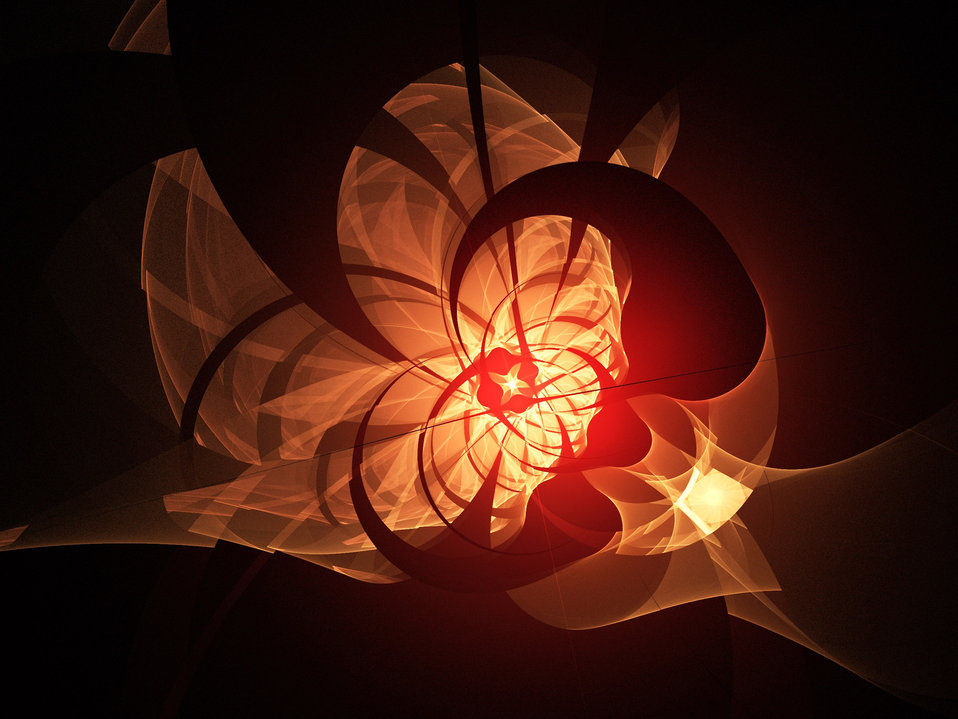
Orange delight

Fractal in various shapes and shades of orange.